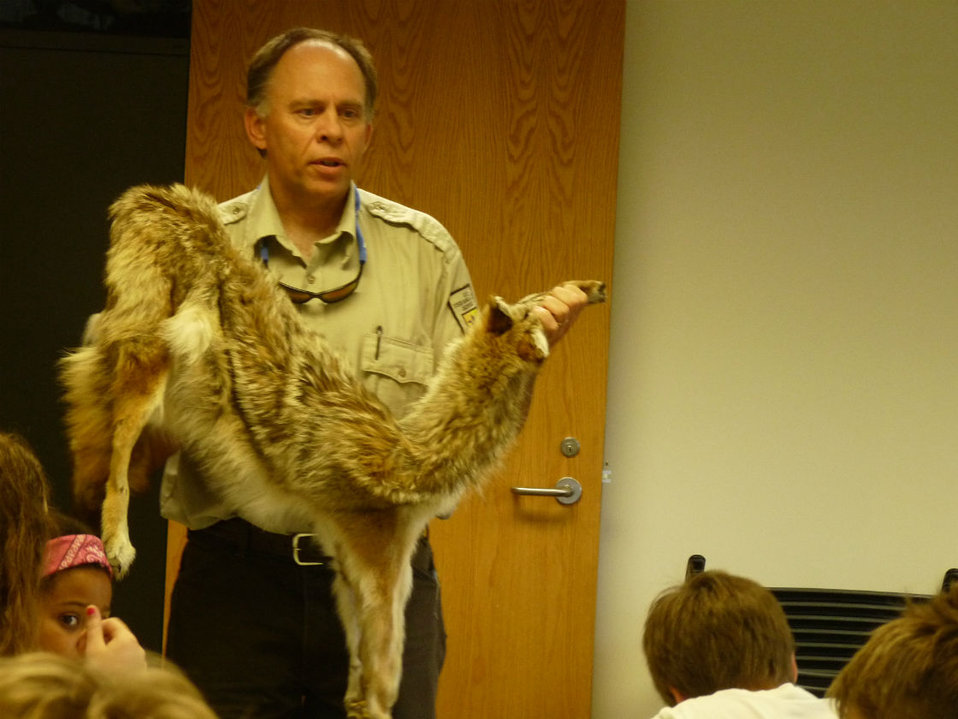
Refuge Manager Walt Ford teaches about Coyotes

Refuge manager Walt Ford regales the children with his knowledge of the differences between coyotes and gray wolves.